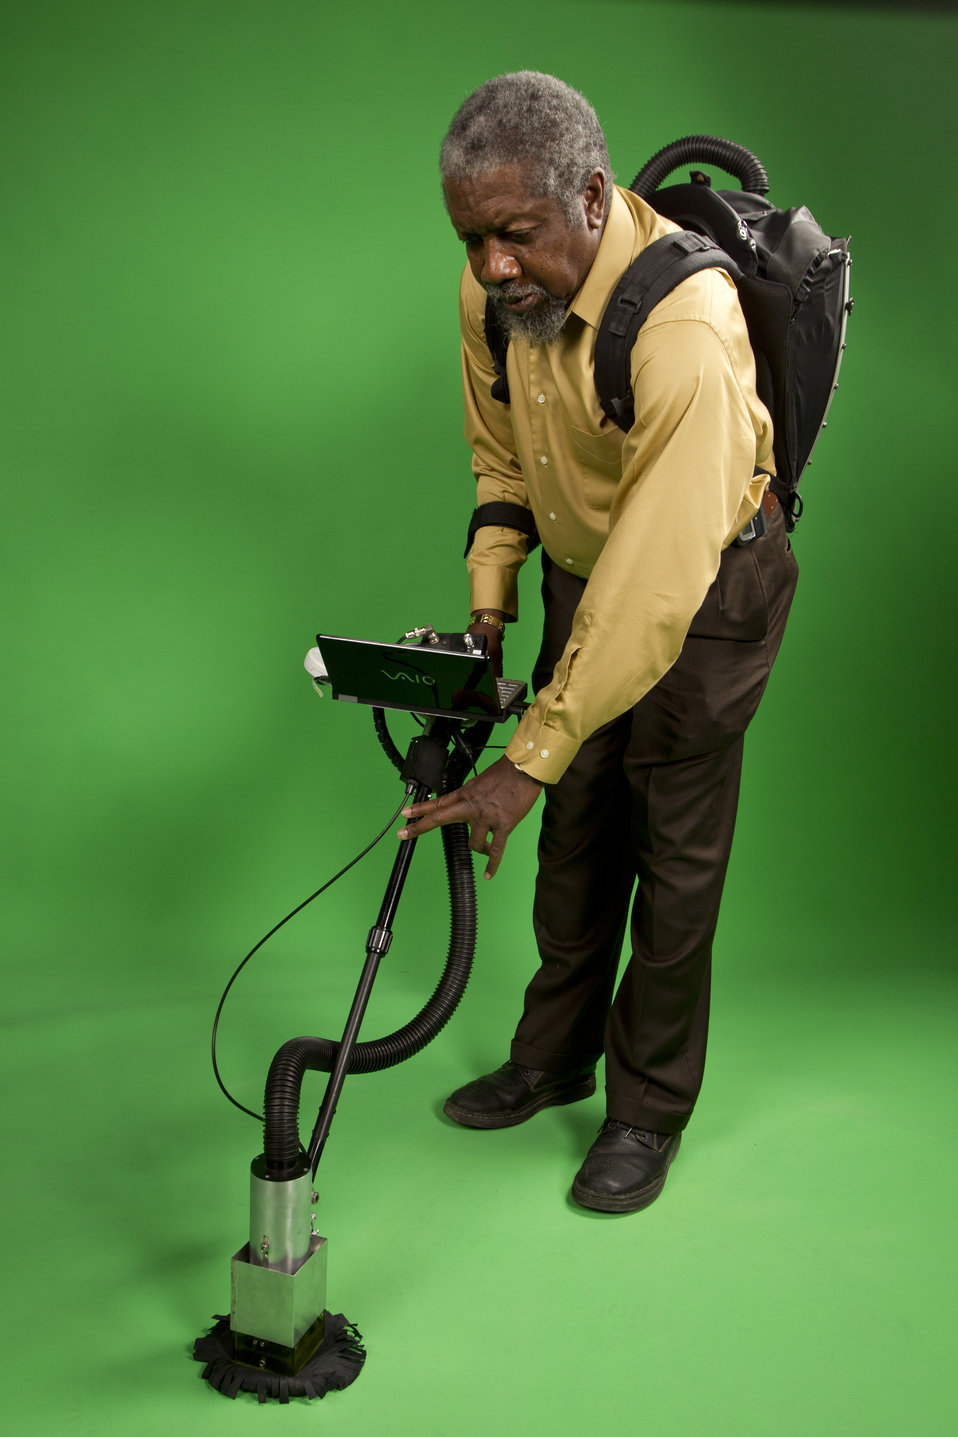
Shown is a backpack mounted Laser Induced Breakdown Spectroscopy (LIBS) System developed at Los Alamos for nuclear safeguard monitoring.

The Los Alamos LIBS technology was also used in the Mars Science Laboratory.